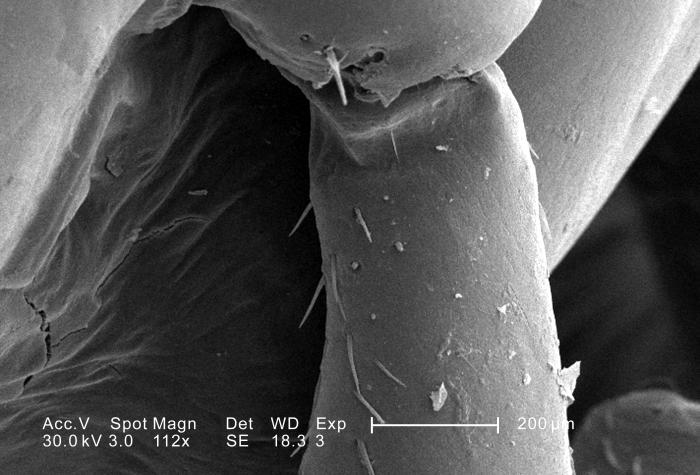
This scanning electron micrograph (SEM) depicted a magnified inferior view of a leg beneath one of the of body segments of an unidentified millipede found outside on the ground in the Decatur, Georgia suburbs. The leg segments included in this field of view include the 'coxa', which is the first leg segment that articulates with the respective body segment, and the 'trochanter', which is the 2nd leg segment that articulates with the coxa; Magnified 112x.